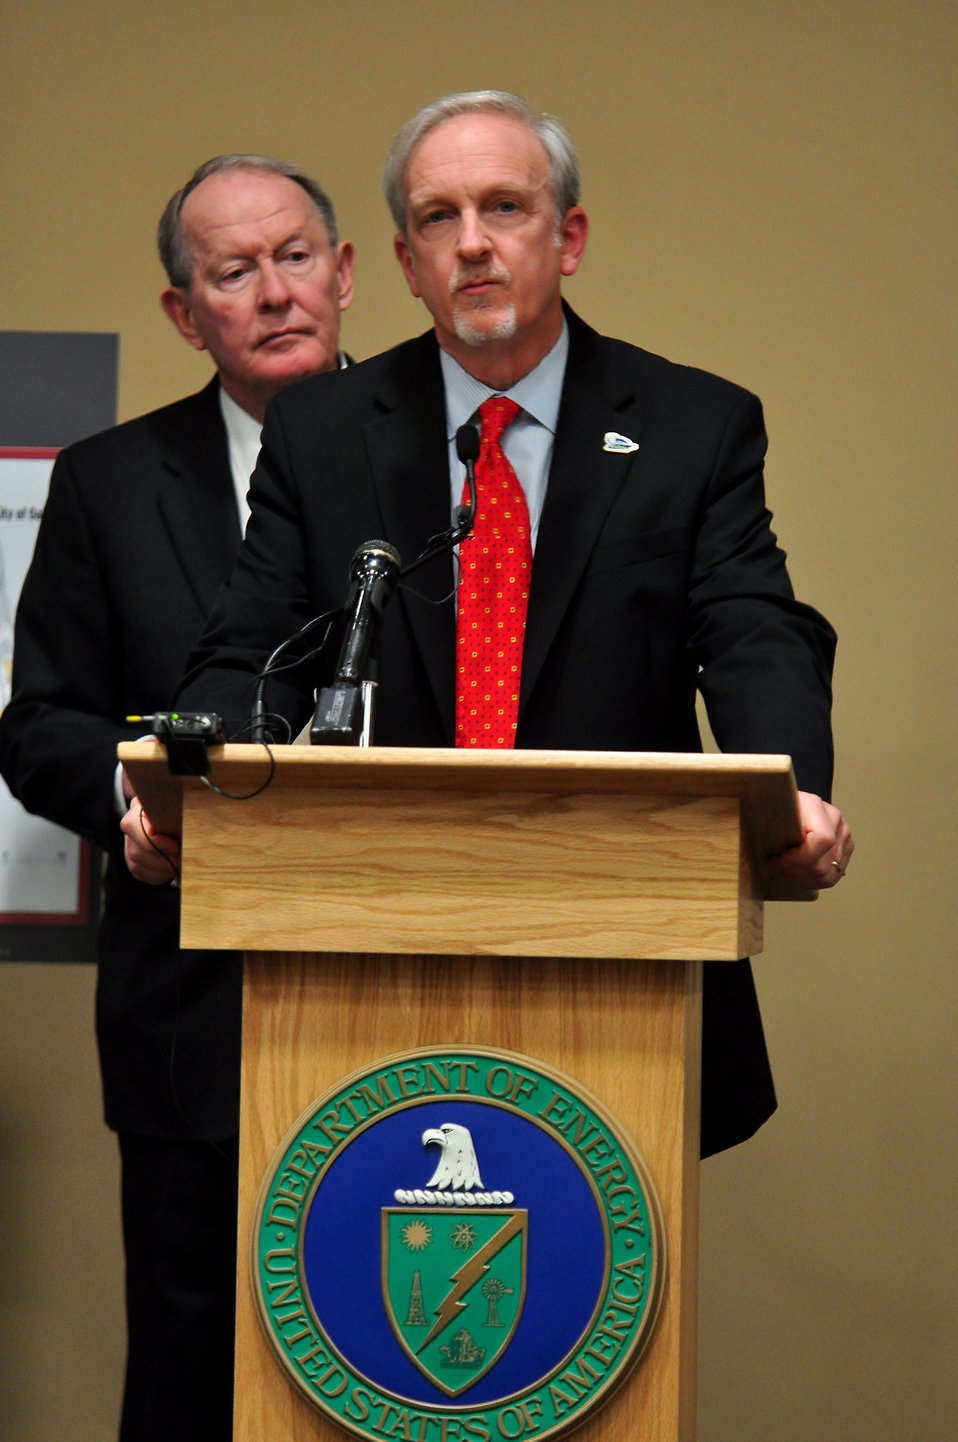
Mercury Cleanup Press Conference Y-12 Oak Ridge Speaking EM Senior Advisor Dave Huizenga with U.S. Sen. Lamar Alexander (R-Tenn.) looking on

13-051 DOE photo Lynn Freeny 5-3-2013 Oak Ridge Tennessee